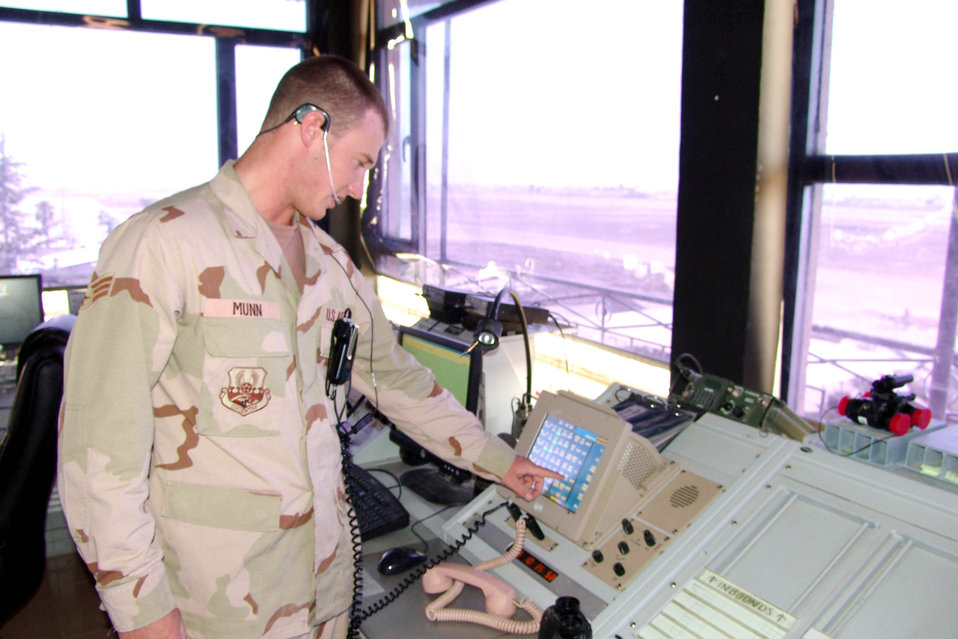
Kirkuk's tower controls sky

KIRKUK AIR BASE, Iraq -- Senior Airman Ike Munn coordinates inbound aircraft with center radar approach and control. He is an air traffic controller with the 506th Expeditionary Operations Support Squadron here.